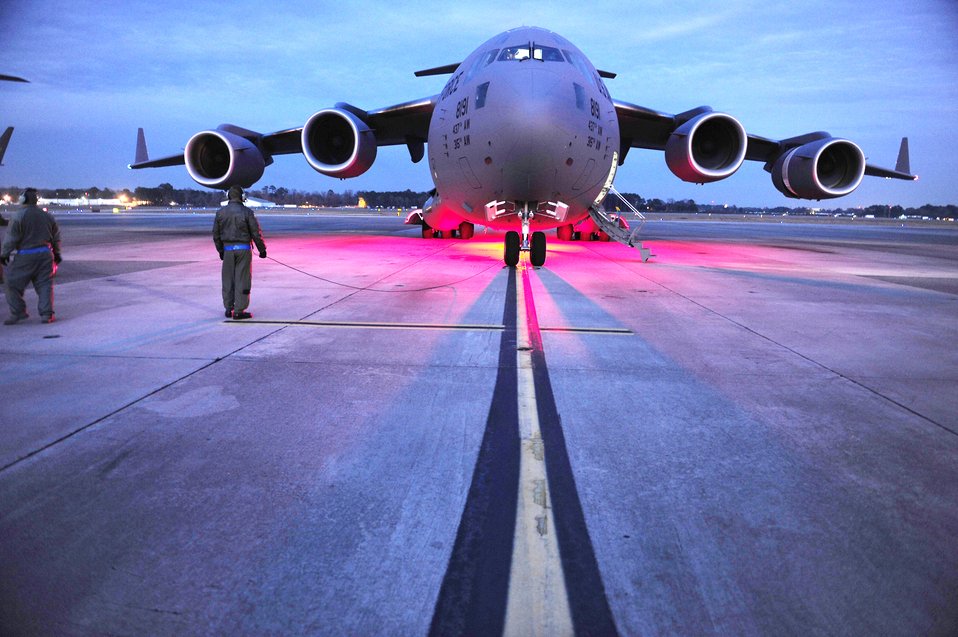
At the ready

Tech. Sgt. Robert Mabry conducts pre-flight duties for a C-17 Globemaster III on the Charleston Air Force Base, S.C., flightline, en route to support relief efforts to Haiti, Jan. 14, 2010. The reservist is a loadmaster with the 317th Airlift Squadron.